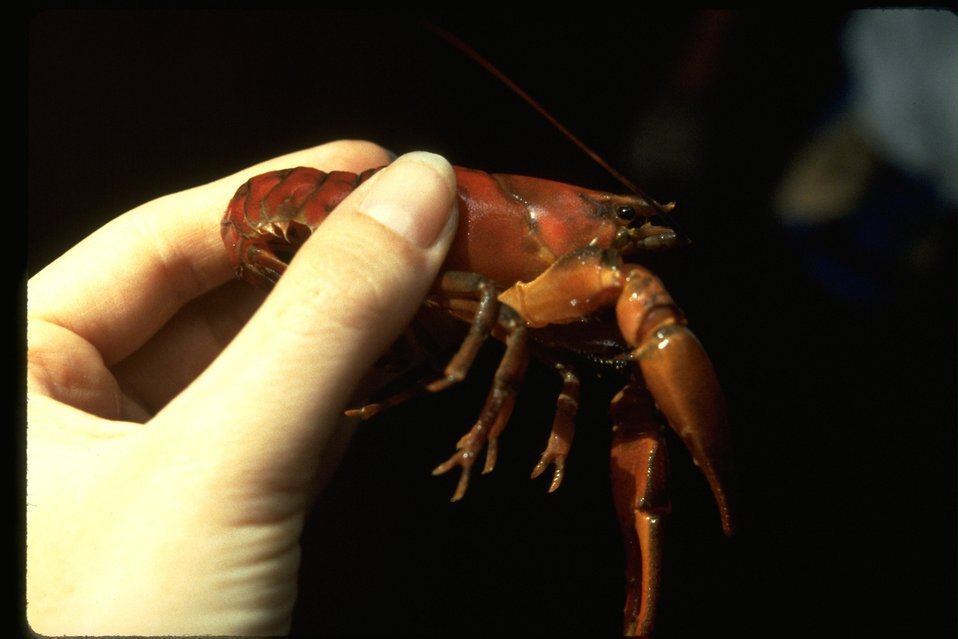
Macro shot of a crayfish.